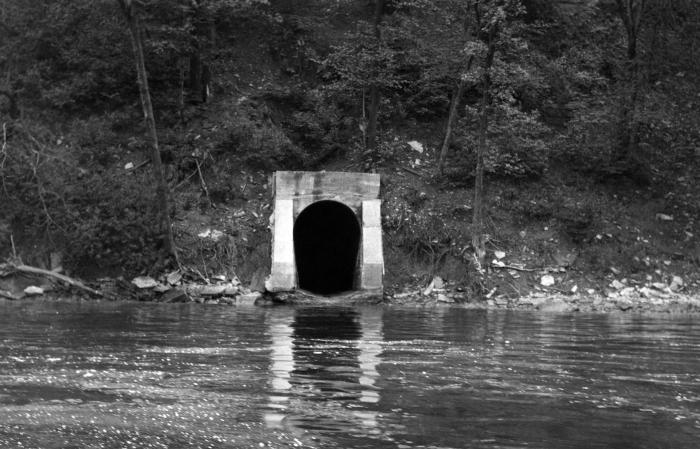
Taken on May 18, 1928, this historic photograph showed the Portland Avenue sewer outlet at a point where it emitted its contents into the Mississippi River in St. Paul. Minnesota. The pollution from the raw sewage was visible on the surface of the river.